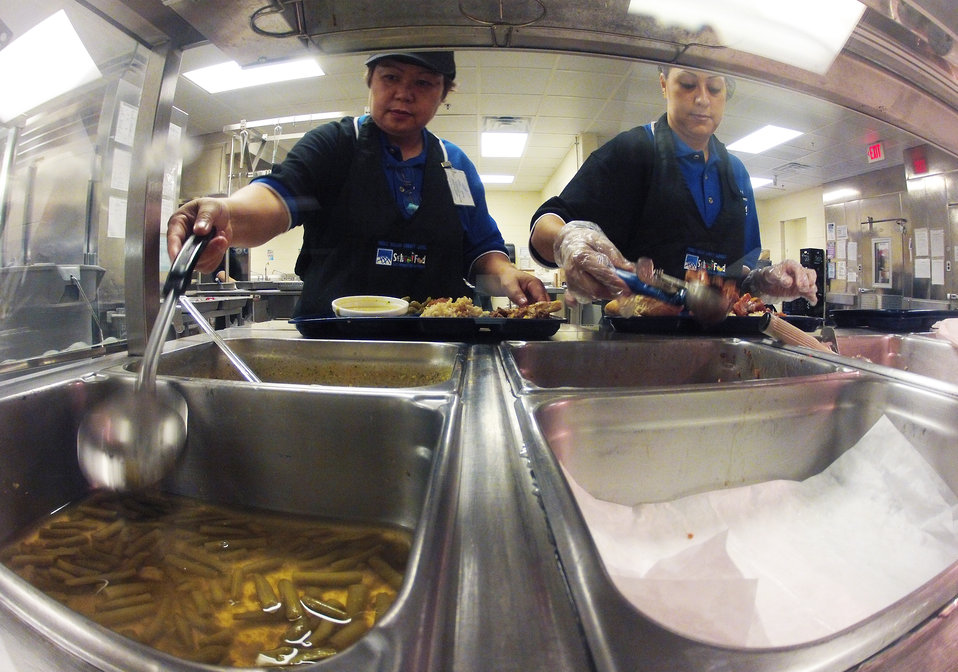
School lunch staff and students enjoy the new school lunch menu created to meet the new standards at the Yorkshire Elementary School in Manassas, VA on Friday, Sept. 7, 2012.